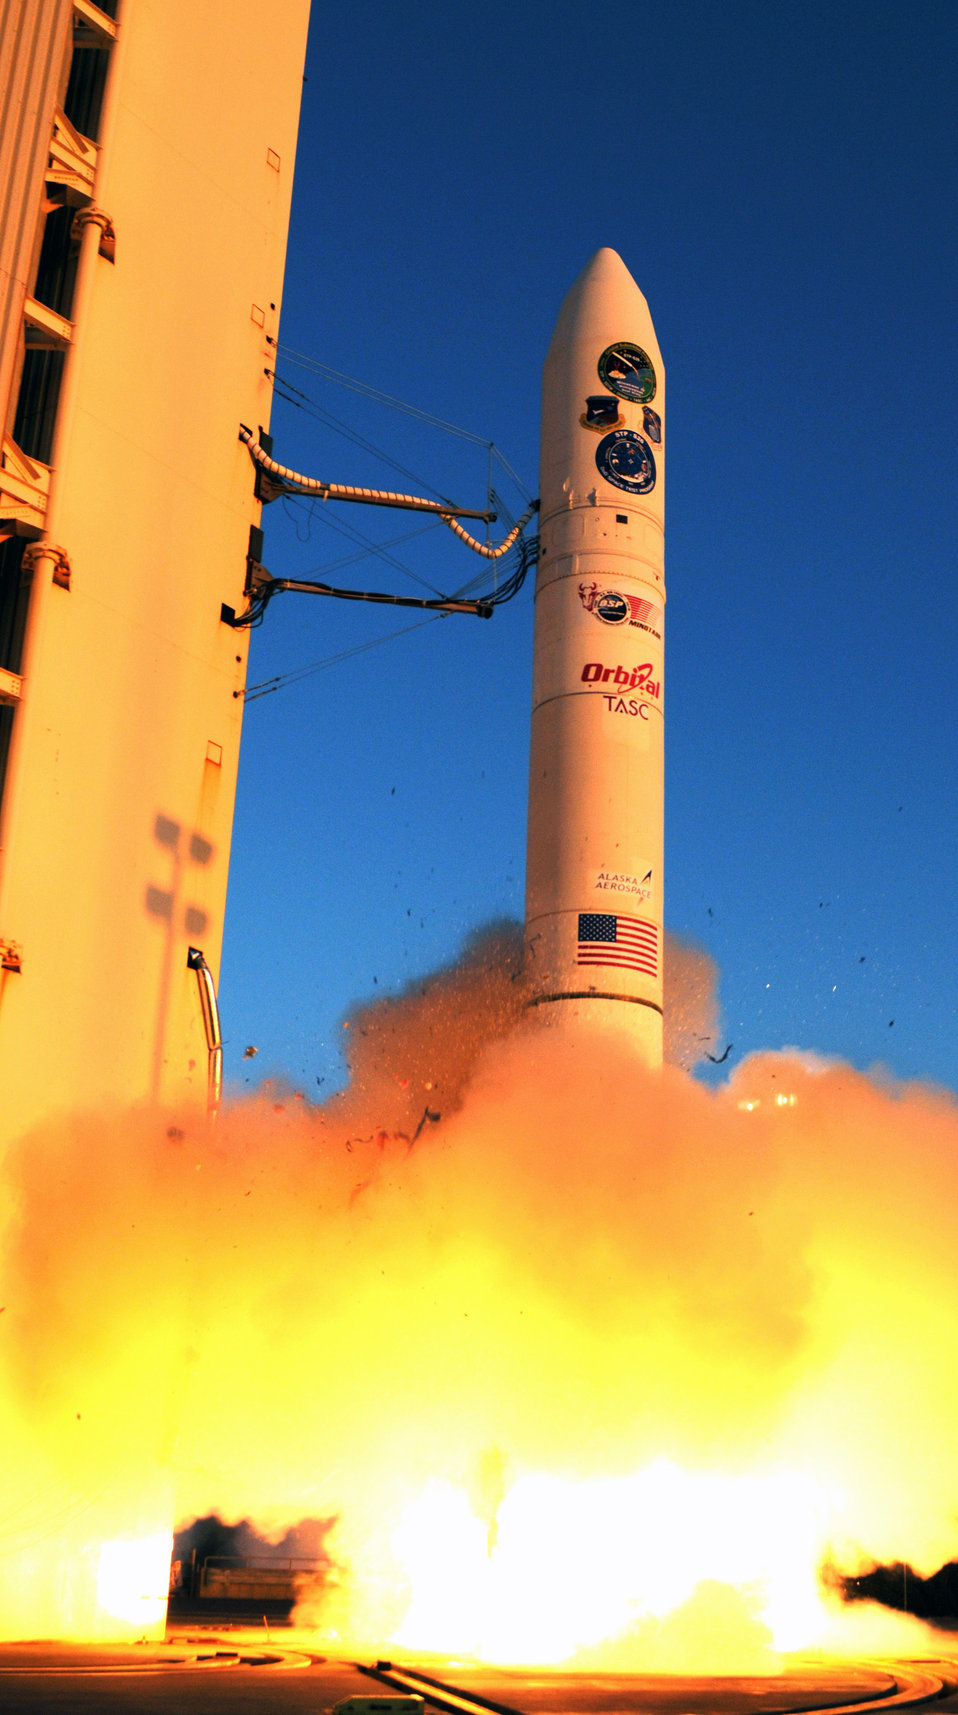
FalconSAT-5 rockets into orbit

A rocket carrying FalconSAT-5 lifts off Nov. 19, 2010 from the Kodiak Launch Complex, Alaska.